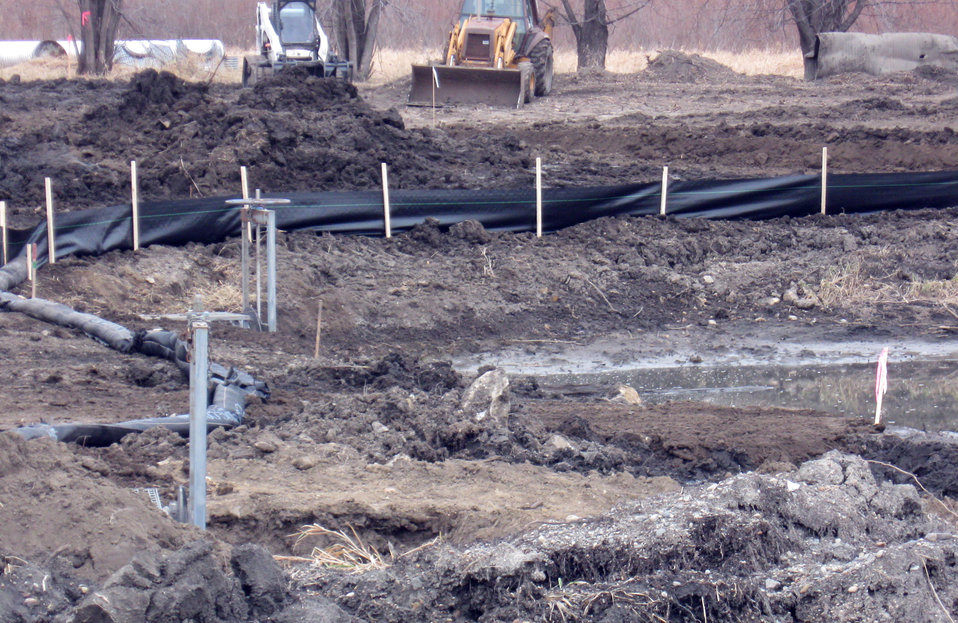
Silt Fence

Silt fences and mulch rolls are used to limit erosion and sedimentation on site.